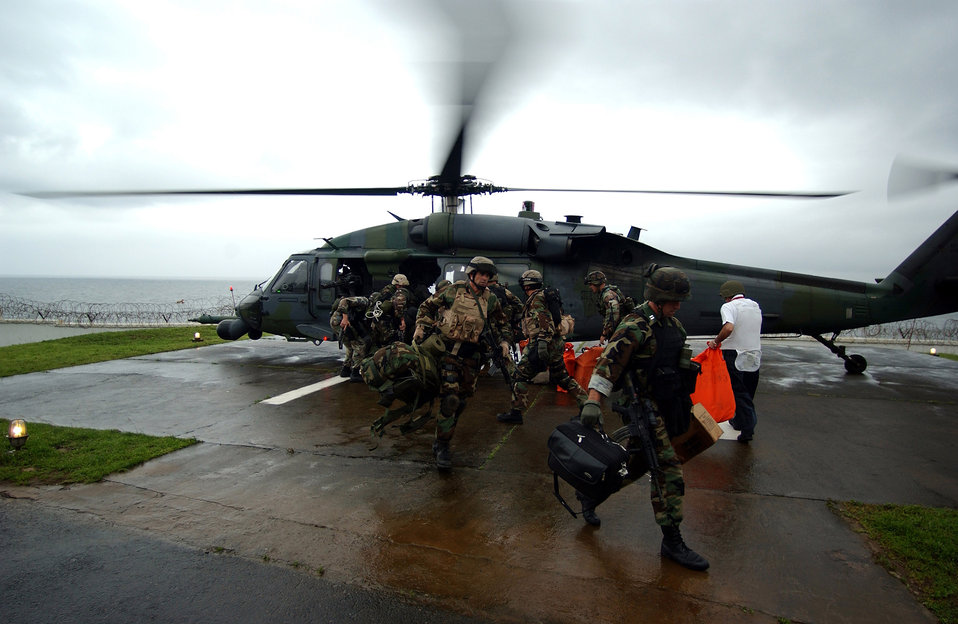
More support in Liberia

MONROVIA, Liberia -- An HH-60G Pave Hawk helicopter drops off Marines from the Southern European Task Force at the U.S. Embassy here July 28. The HH-60G is deployed from the 56th Rescue Squadron at Naval Air Station Keflavik, Iceland. The 398th Air Expeditionary Group is currently in Sierra Leone to provide personnel recovery and emergency evacuation capability for the humanitarian assistance survey team and the fleet antiterrorism security team in Liberia.